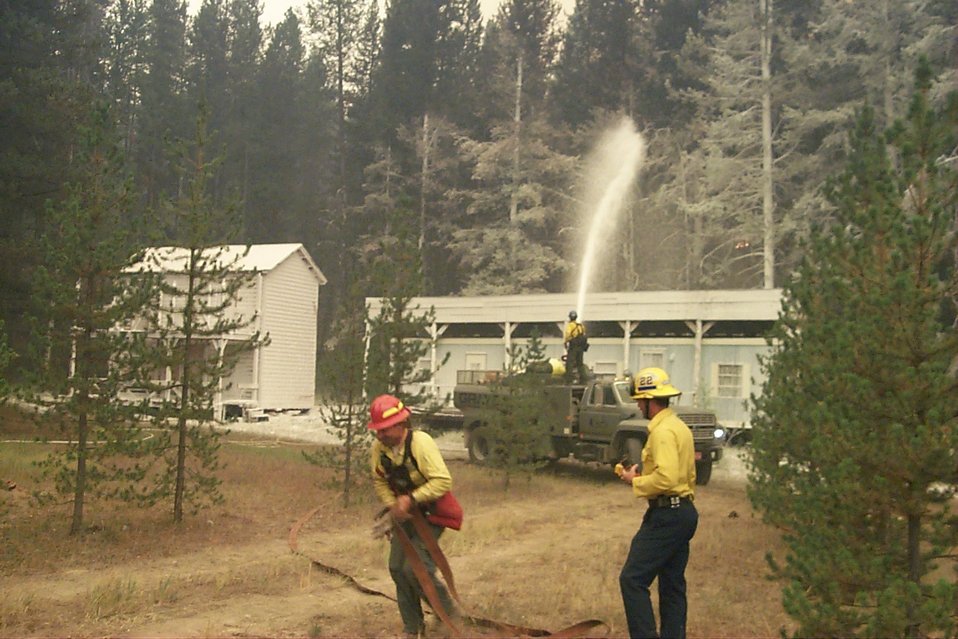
Fire retardant measures Urban interface Fire Clearwater Fire Salmon Field Office USRD Upper Snake River District